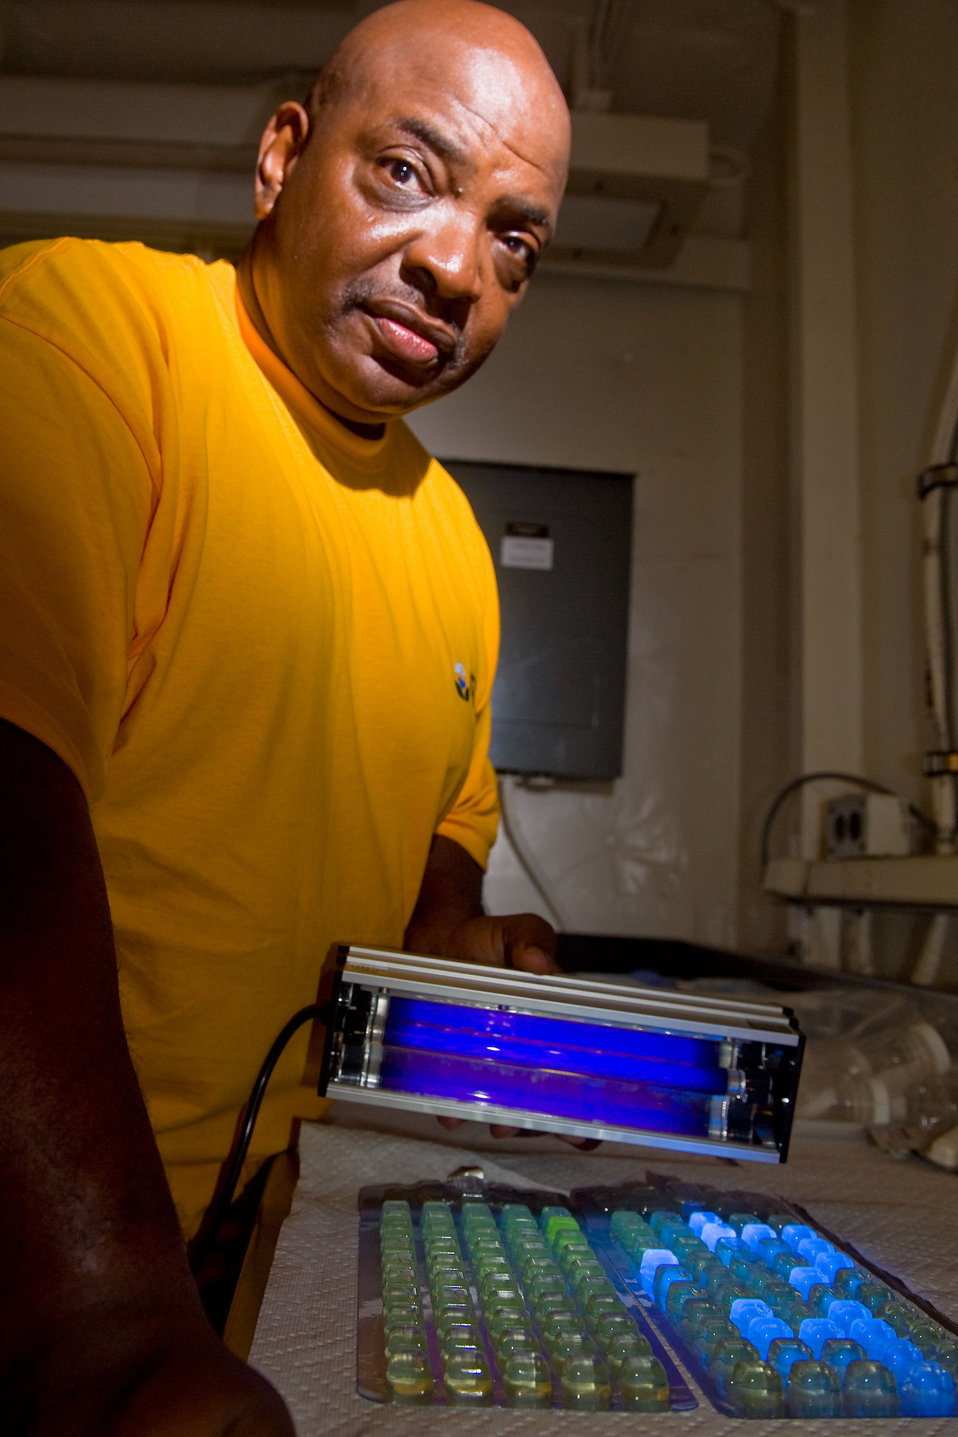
August 2010, Glowing mammalian intestinal bacteria!

Bill Early, Deputy Regional Administrator, Region 3, illuminates Enterococci test trays with until violet light. Blue fluorescent cells exhibit a positive response.